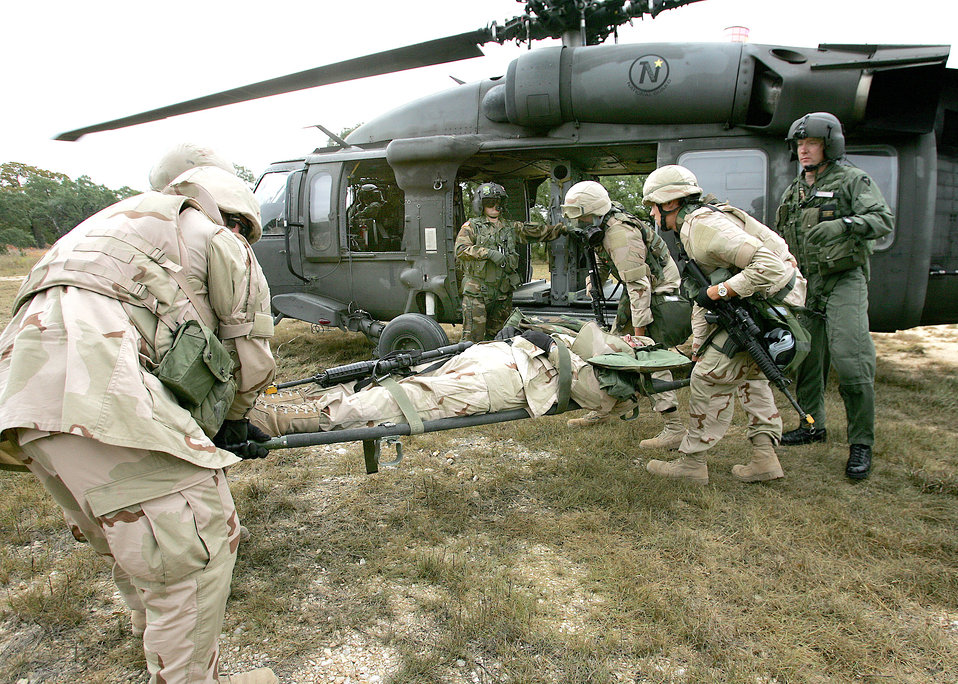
Quick transfer

CAMP BULLIS, Texas (AFPN) -- Students of the basic combat convoy course load